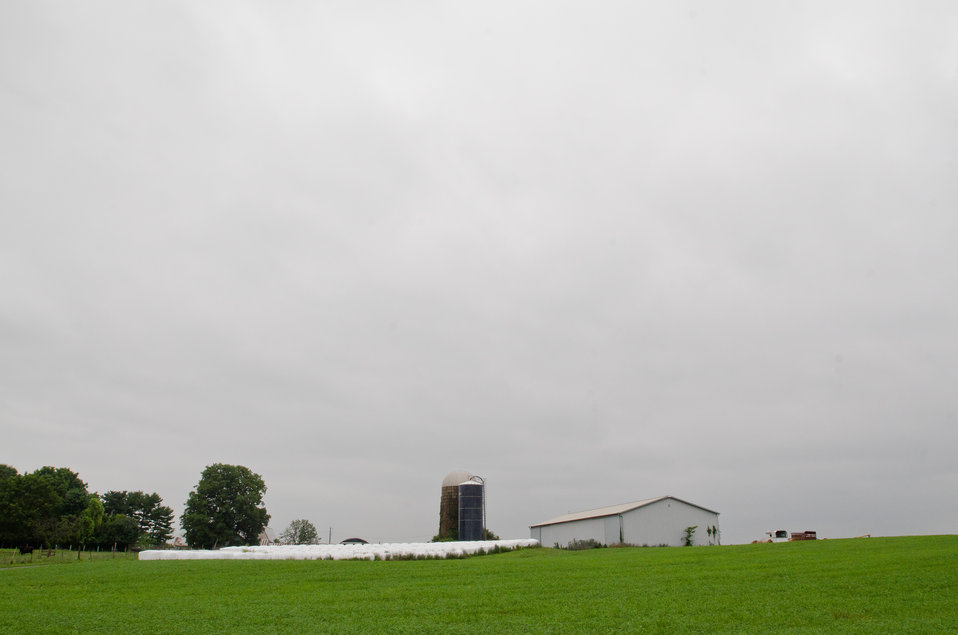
Nick’s Organic Farm, in Adamstown, MD, on Friday, July 12, 2013. The farm, owned by Nick Maravell, produces Black Angus beef, chicken, turkey, eggs, hay, soybeans, corn, alfalfa, orchard grass, rye; and other crops. The cattle are100% grass-fed receiving certified organic pasture, certified organic hay (in winter), water and mineral salts mixed with sea kelp. The cattle are not fed hormones, antibiotics or animal products. Poultry feed from grain is ground from organic grain. The poultry also graze on organic pastures. The farm has conducted on-farm research with federal, state and non-profit agencies to refine organic practices.